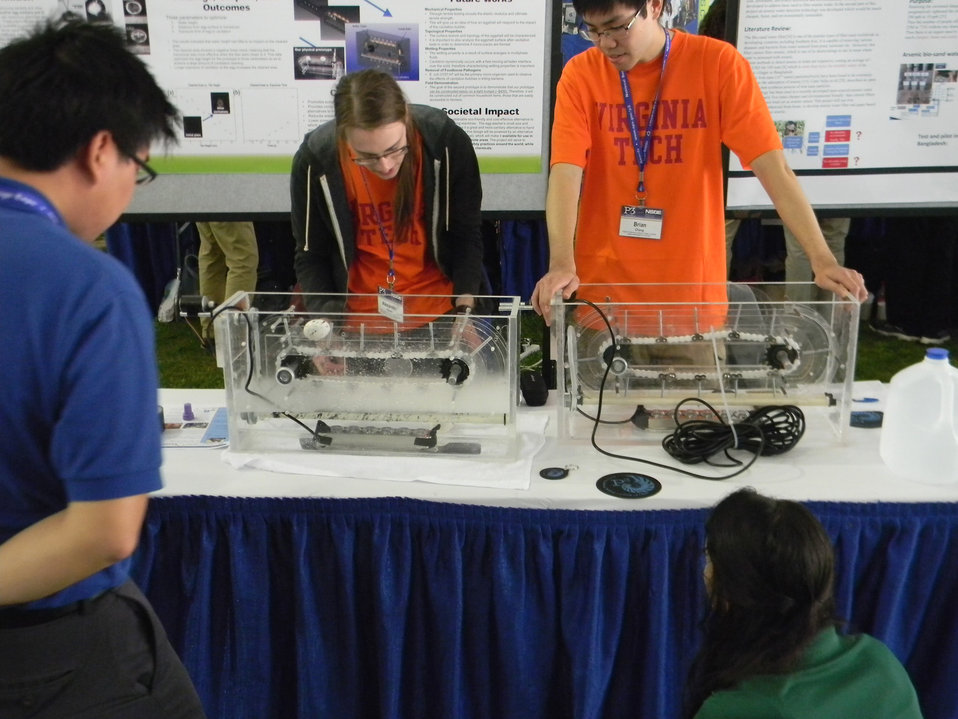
April 18, 2013 - P3 Design Expo, Virginia Tech

A better look at the sustainable egg washer by Virginia Tech team.

VTech Egg Team’s P3 page
VTech Egg Team’s Facebook page

People Prosperity and the Planet: National Sustainable Design Expo on the National Mall 18-19 April 2013